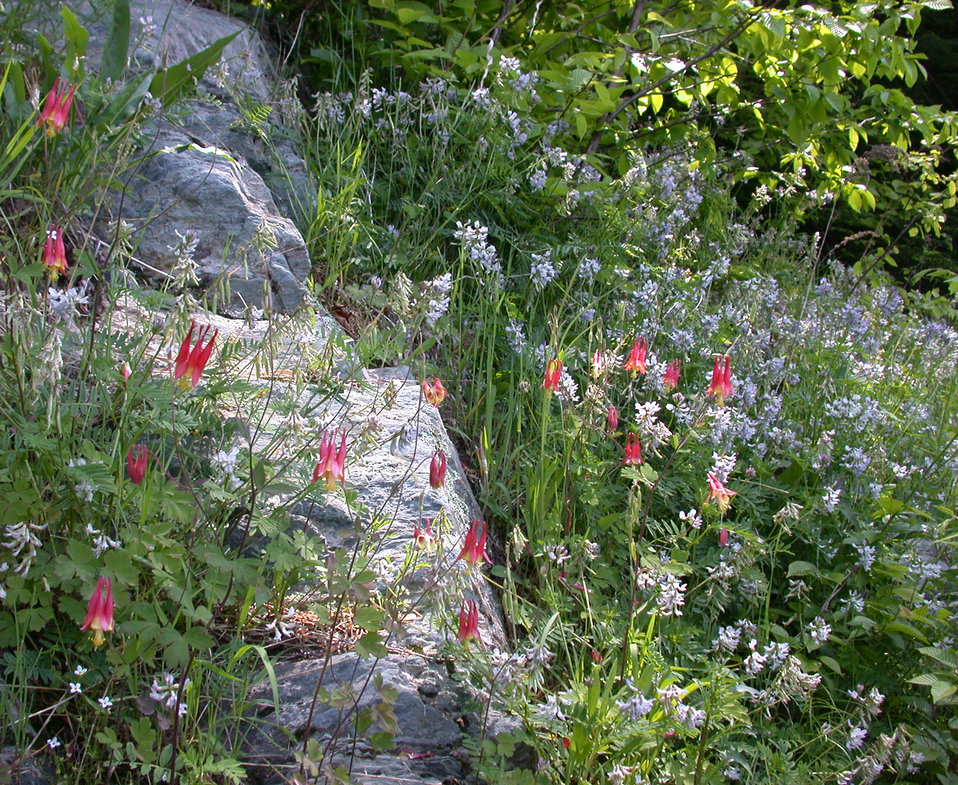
Photo of the Week - Jesup's Milk Vetch (NH)

Photo of the week - 12/2/13

Jesup's Milk Vetch alongside Red Columbine. The endangered plant clings by its small roots to silt-filled crevices in steep rock outcrops.